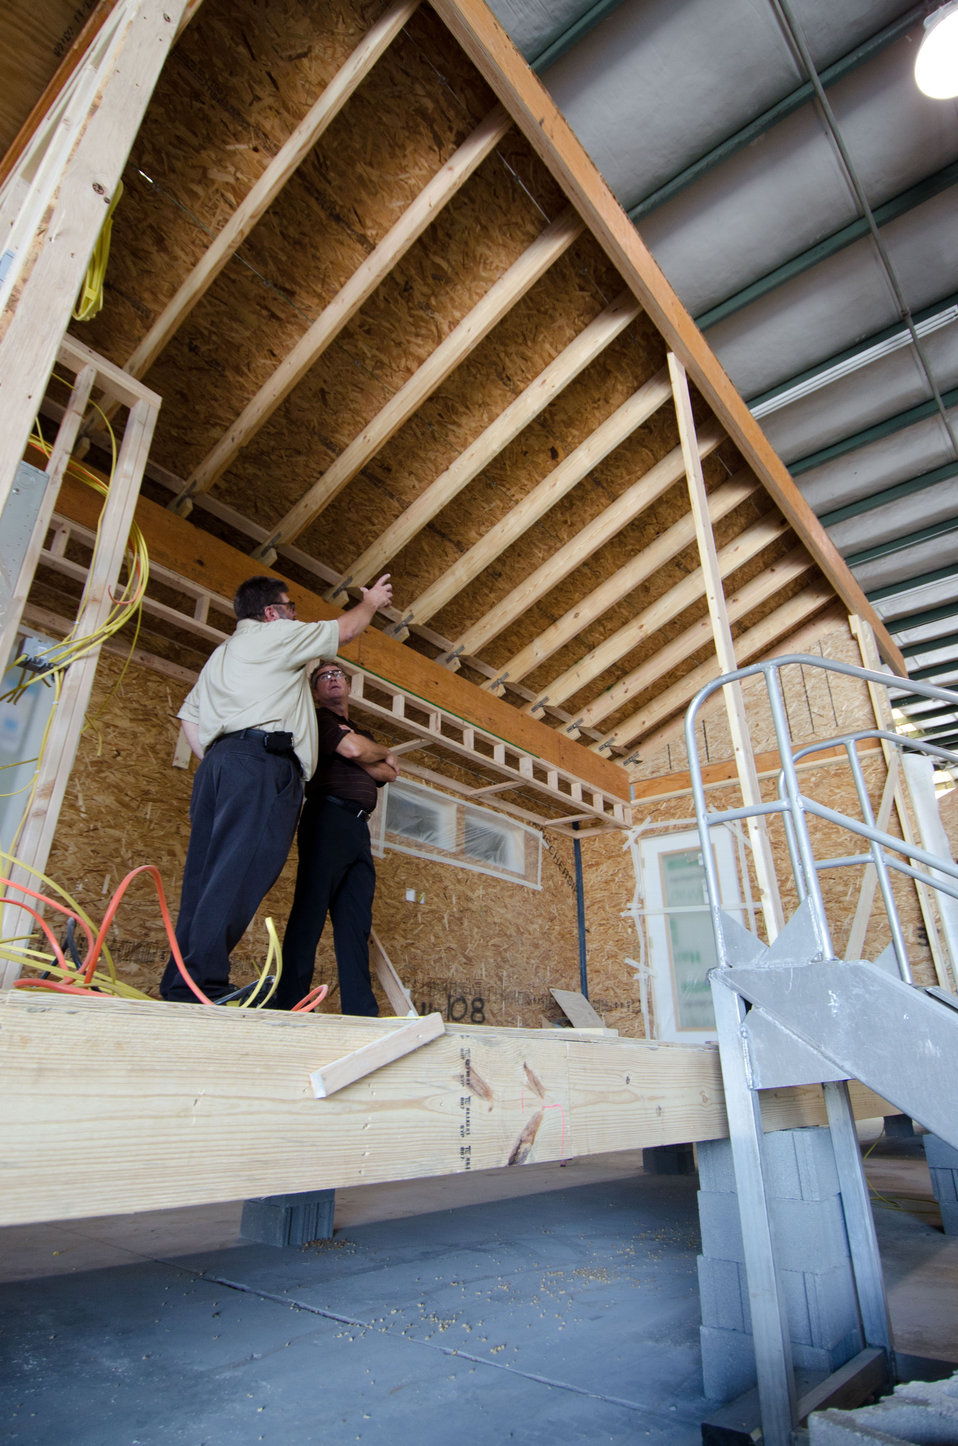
Hinged roof rafters allow the roof to be transported at a lower height on roadways. The energy efficient manufactured home stands ready for dry walling at Stardust Industries on Wednesday, July 13, 2011. They are helping retool and redirect Kentucky’s houseboat manufacturing industry – which has been decimated because of the struggling economy – by using its facilities and manpower to create low-cost housing that is energy efficient. Rural Development obligated $499,000 in Rural Business Enterprise Grant funds to support this unique endeavor. Up until a few years ago, there were several successful houseboat manufacturers in the four-county area surrounding the city of Somerset. Most have now ceased operation or drastically reduced output, which has led to dramatic, long-term job loss. These new energy efficient homes will be constructed in redesigned, refitted houseboat factories using local workers that have been retrained.